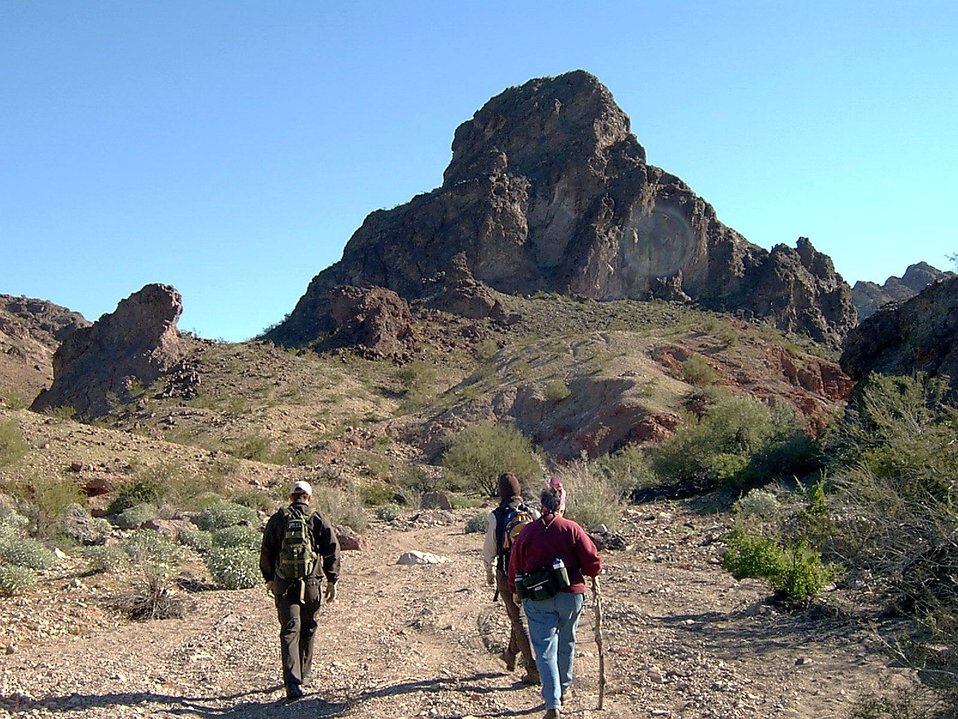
Havasu Refuge

Hikers on a bat outing in the Havasu National Wildlife Refuge wilderness, AK.